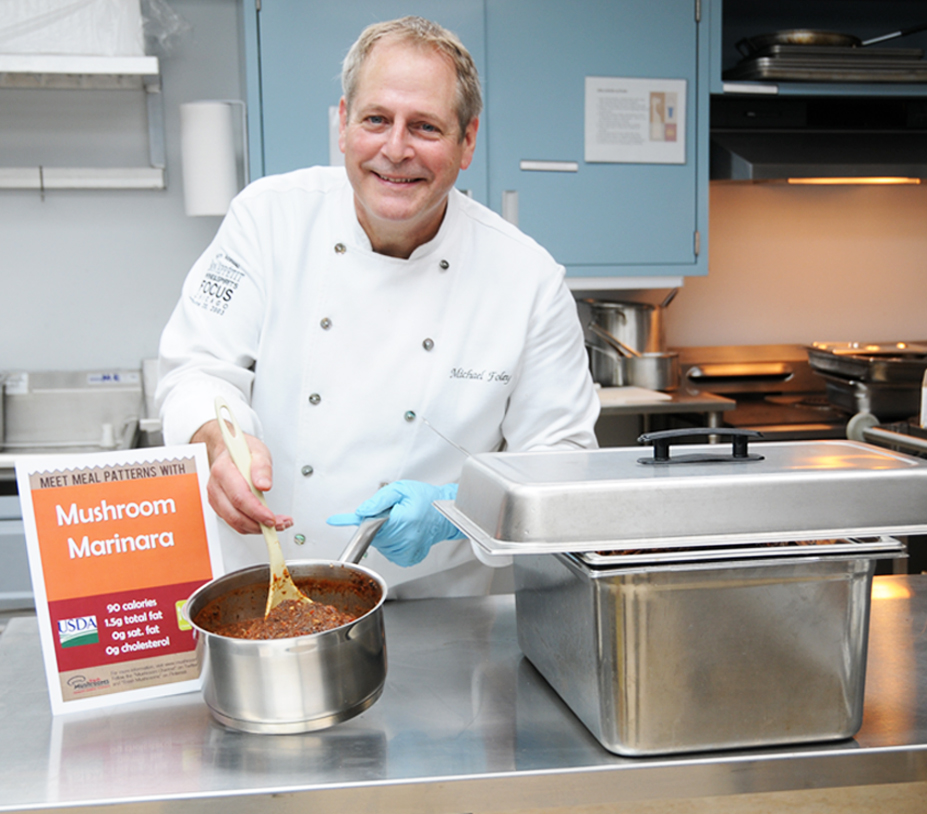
Chef---Web

Chef Michael Foley showcases the versatility of mushrooms during September, which is National Mushroom month. U.S. Department of Agriculture (USDA) employees sampled his mushroom marinara sauce during a recent event. The U.S. Department of Agriculture’s (USDA) Agricultural Marketing Service (AMS) supports the mushroom industry through oversight of the Mushroom Council, as they develop marketing and educational projects.